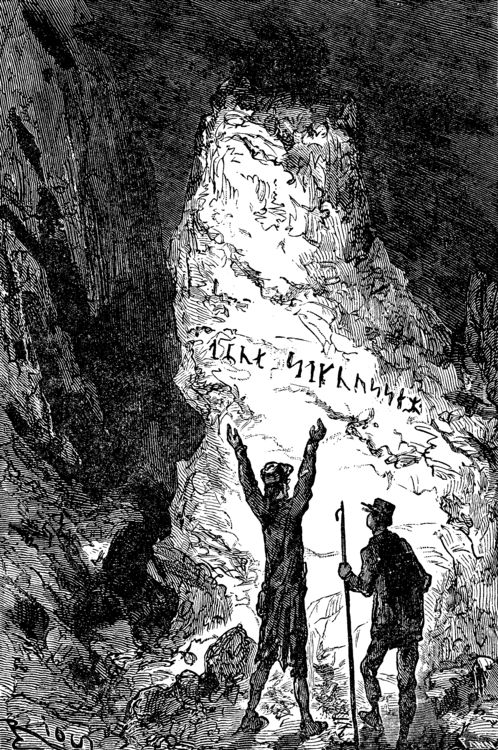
An ilustration from the novel 'Journey to the Center of the Earth' by Jules Verne painted by Édouard Riou. Polski: Ilustracja powieści Juliusza Verne'a 'Wyprawa do wnętrza Ziemi' autorstwa Édouarda Riou. Français : 'Voyage au centre de la Terre', Édouard Riou. Français : « Regarde ! » me dit le professeur.